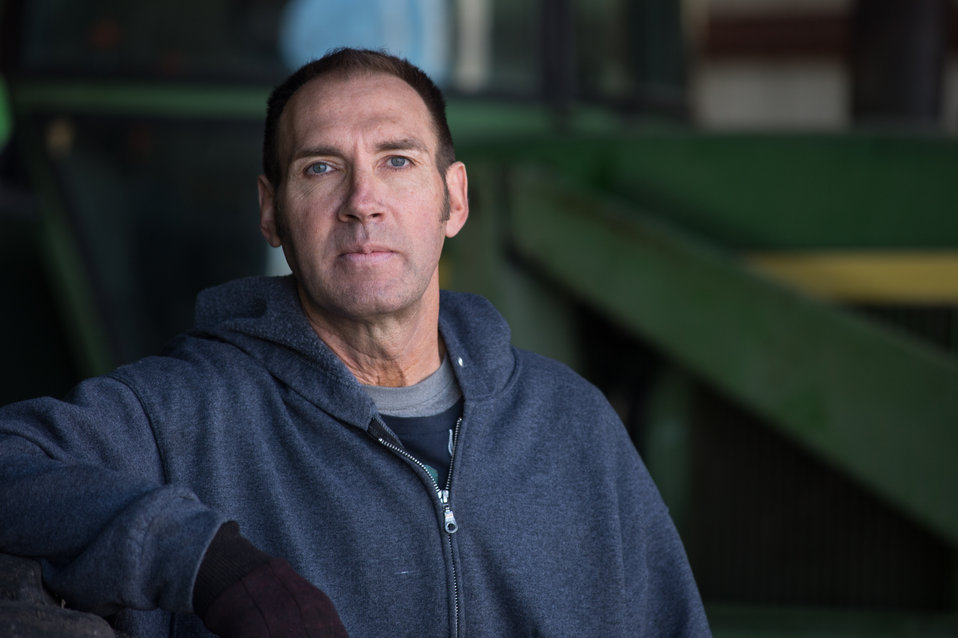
Jeff Hoff at his farmstead in Perley, MN, on Tuesday, April 30, 2013. With the assistance of the U.S. Department of Agriculture (USDA), he was able to build up and modify an earthen dike that holds back flood waters around his home, structures and and farm equipment. To learn about the USDA Red River Basin Initiative, see www.mn.nrcs.usda.gov/news/features13/RRBI.html.